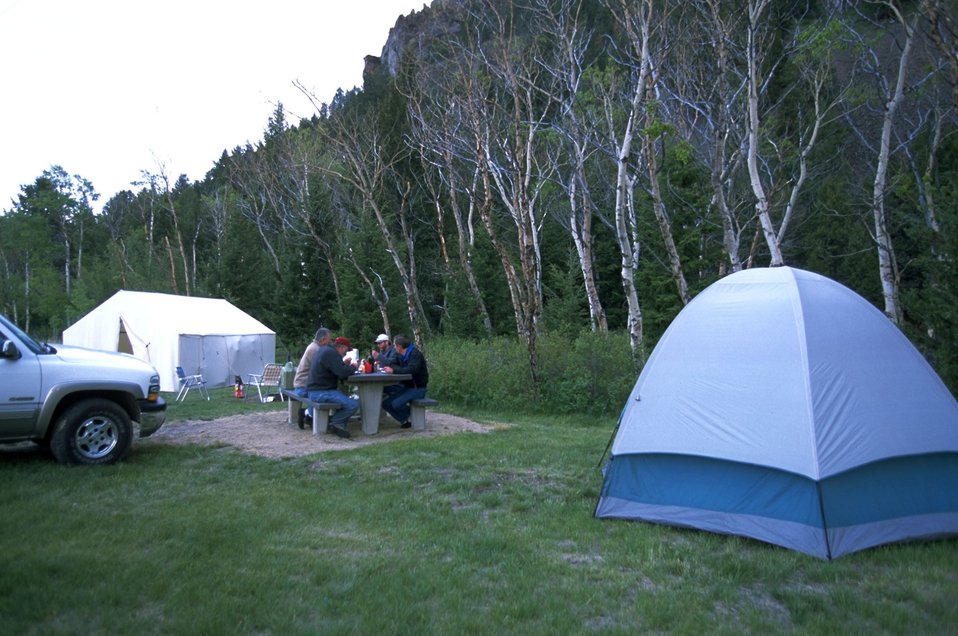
Tent campers at the Divide Campground